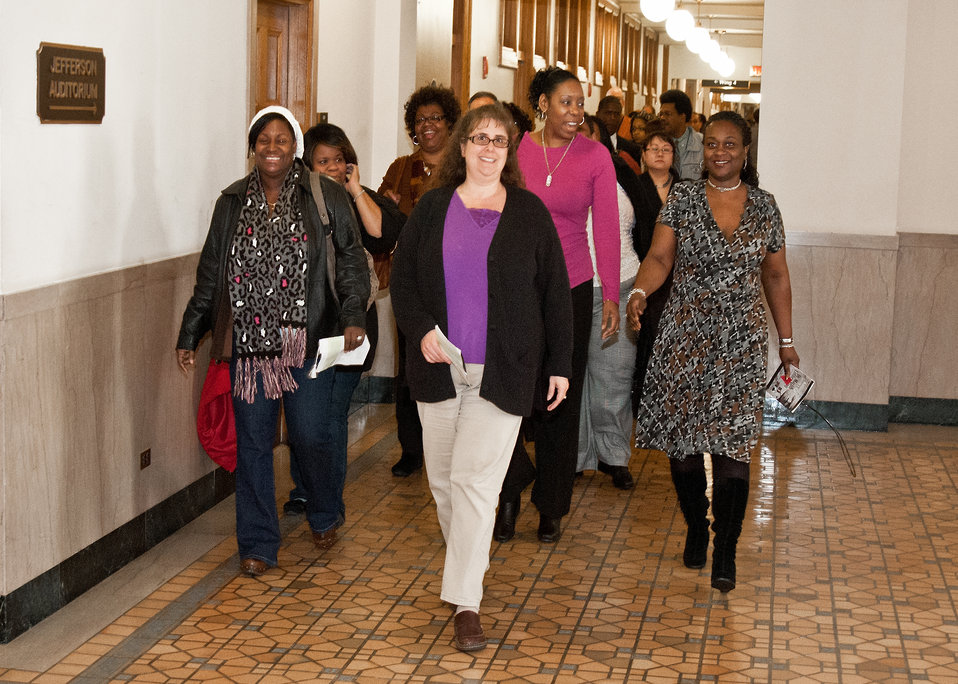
20120112-OHRM-RBN-Nat. Service Day

United States Department of Agriculture employees march through the hallways of USDA to a luncheon for employees after attending the National Service Day and Martin Luther King Celebration in honor of Dr. Martin Luther King Jr’s contributions to the Civil Rights Movement at the United States Department of Agriculture in Washington, D.C., on Thursday, January 12, 2012.